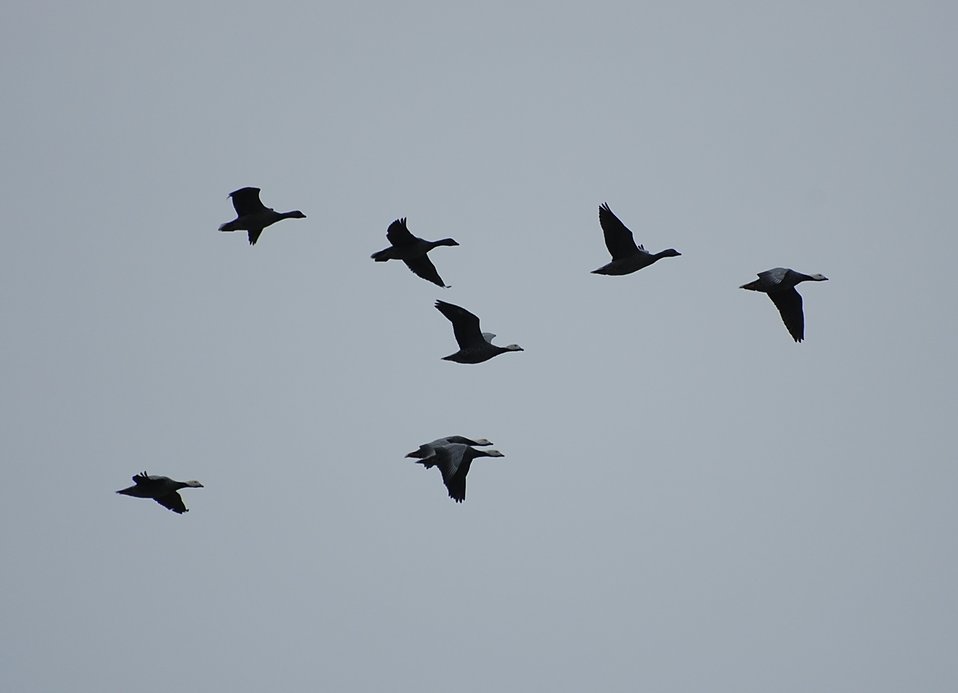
Brant at Izembek Lagoon

Izembek National Wildlife Refuge